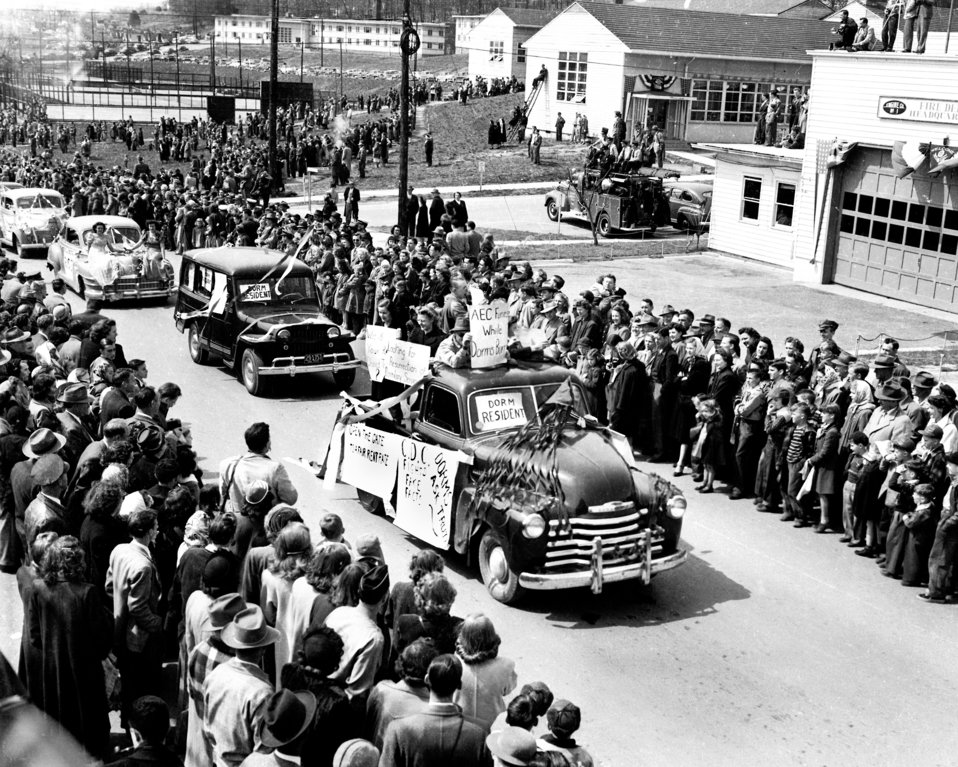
Gate Opening 1949 Oak Ridge

5428-7 DOE photo Ed Westcott 3-19-1949 Tennssee Ave - Jackson Square Oak Ridge Tennessee